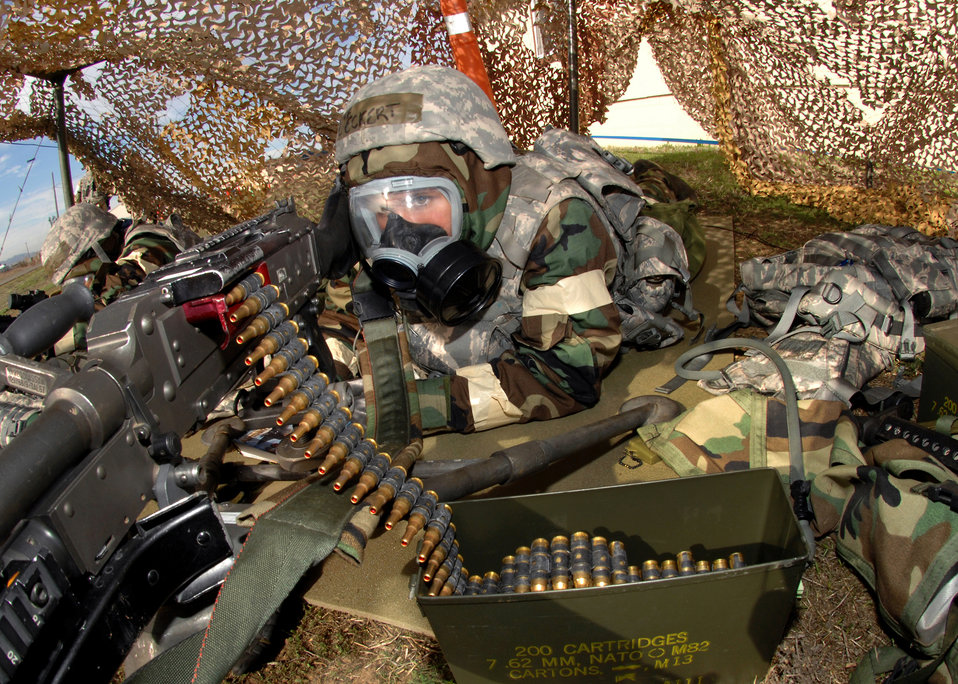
Prepared for anything

Airman 1st Class Tera Eckert, a member of the 60th Security Forces Squadron, defends her position firing a M-240B machine gun during an 'attack' during an operations readiness exercise at Travis Force Base, Calif., Nov. 4, 2010. She is also wearing protective gear to shield her from a chemical assault.